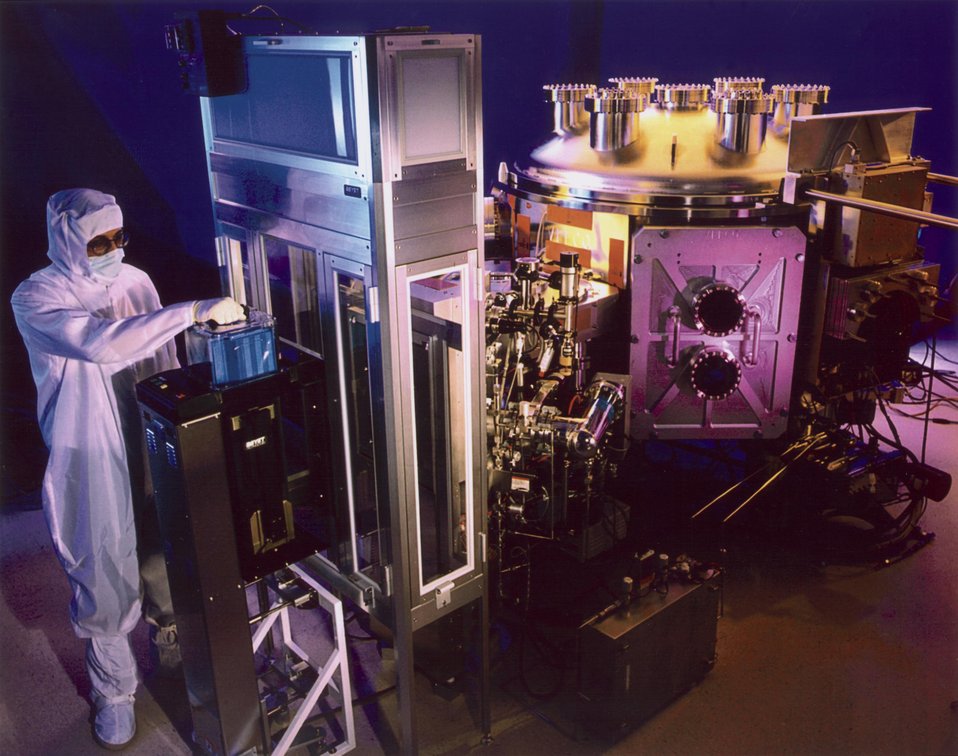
LLNL'S ULTRA CLEAN ION BEAM SPUTTER DEPOSITION SYSTEM.
THE ULTRA CLEAN ION BEAM SPUTTER DEPOSITION SYSTEM, DEVELOPED AT LLNL, IS USED TO PRODUCE PRECISE, UNIFORM, HIGHLY REFLECTIVE MASKS. A KEY REQUIREMENT OF THE NEXT GENERATION LITHOGRAPHY SYSTEM IS THAT IT PRODUCE VIRTUALLY DEFECT-FREE MASKS.